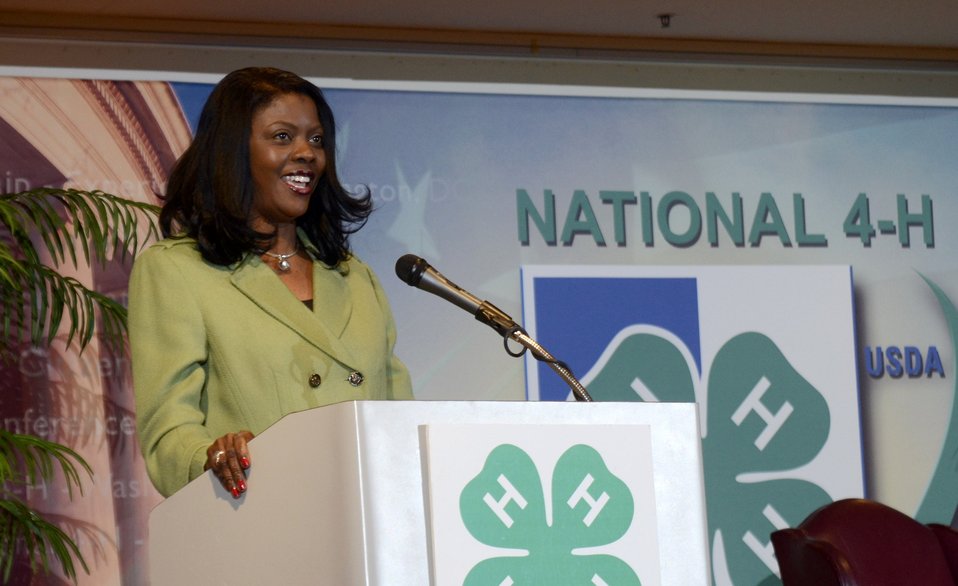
U. S. Department of Agriculture (USDA) National Institute of Food and Agriculture (NIFA) Acting Director Dr. Chavonda Jacobs-Young speaks at the National 4-H Conference held at the National 4-H Youth Conference Center in Chevy Chase, MD, on Monday, March 26, 2012.